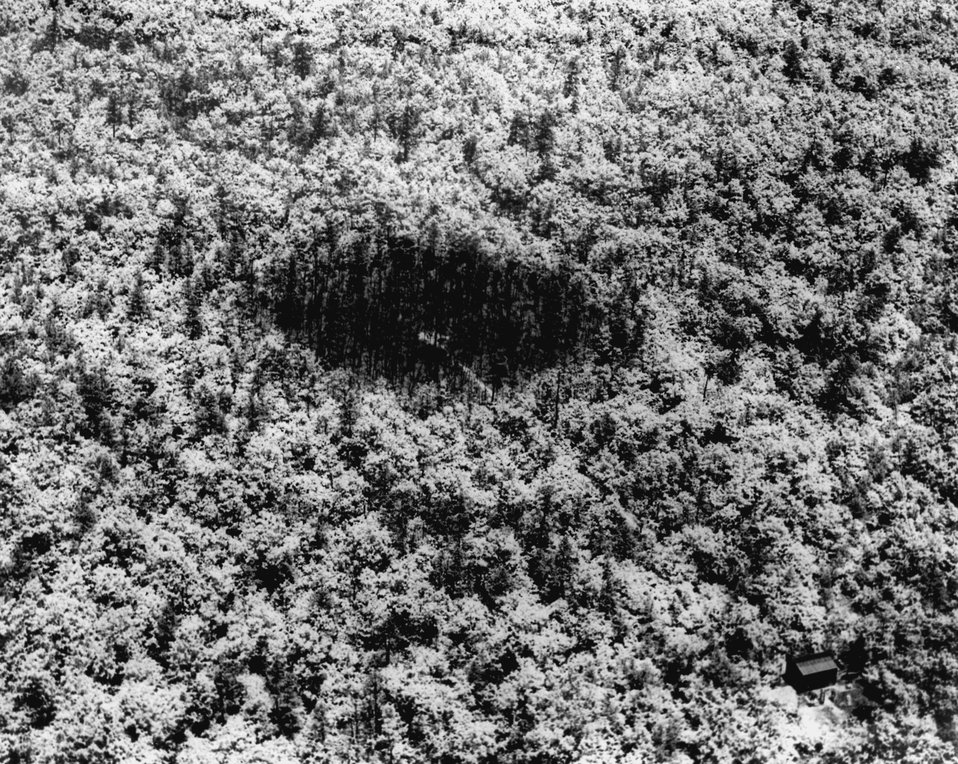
Aerial view of the Biology Gamma Forest. c. 1963